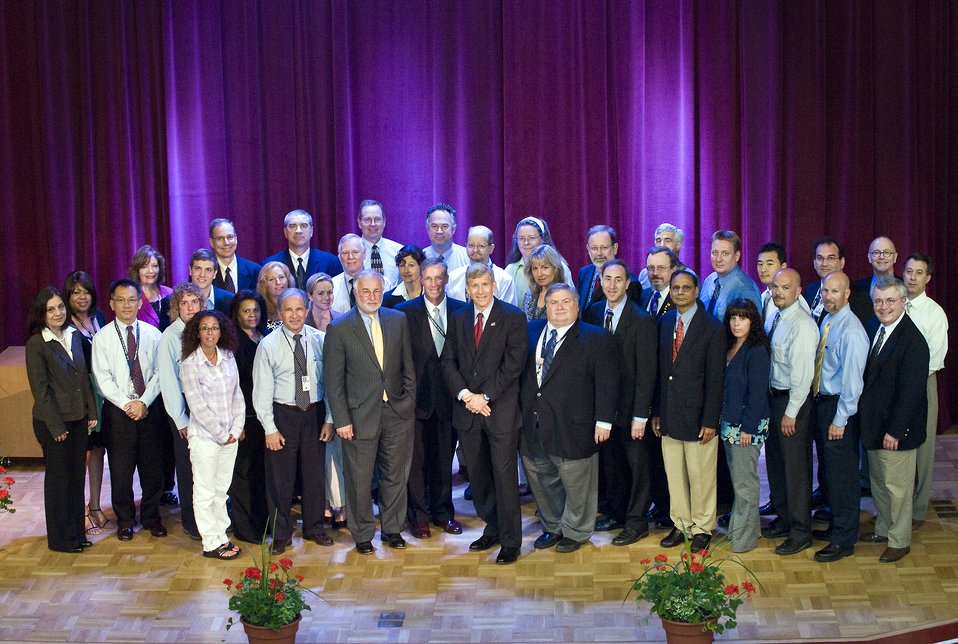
Deputy secretary of doe.Daniel poneman